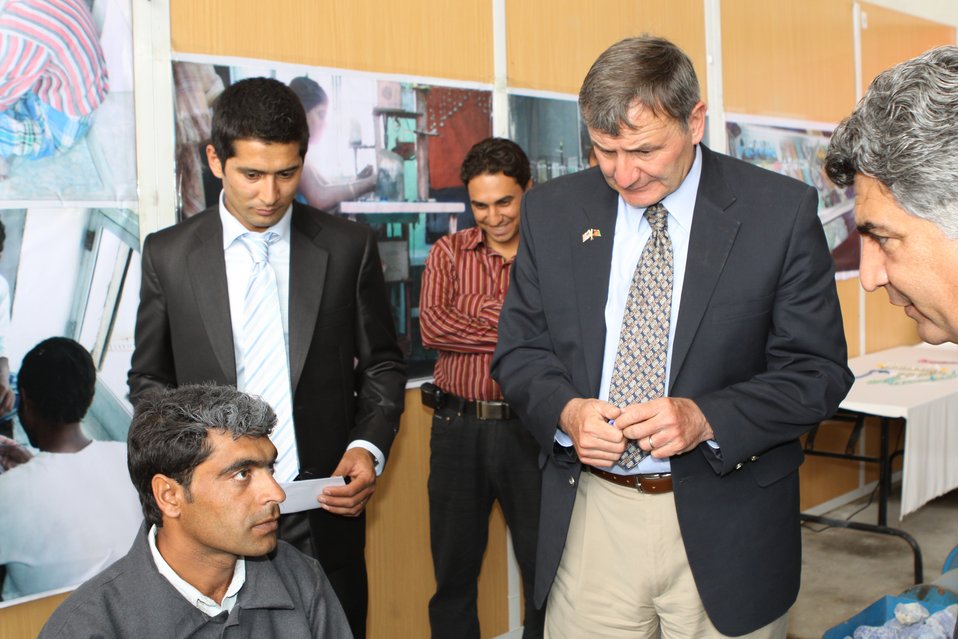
100525 Hirat Marble Conference 522